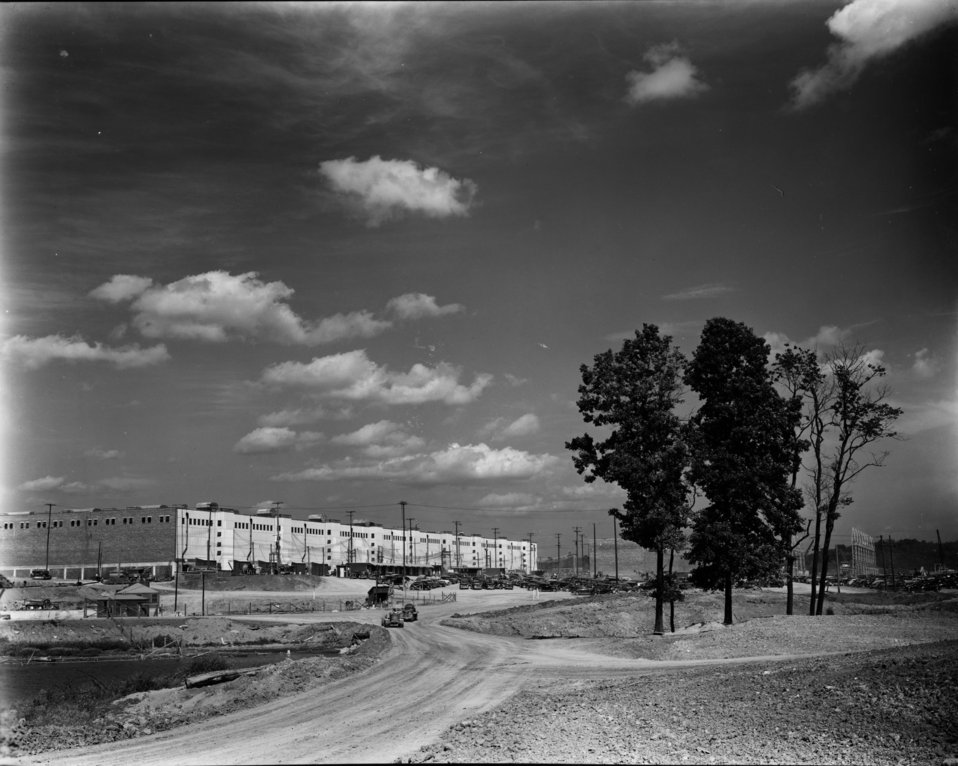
K-27 at Oak Ridge